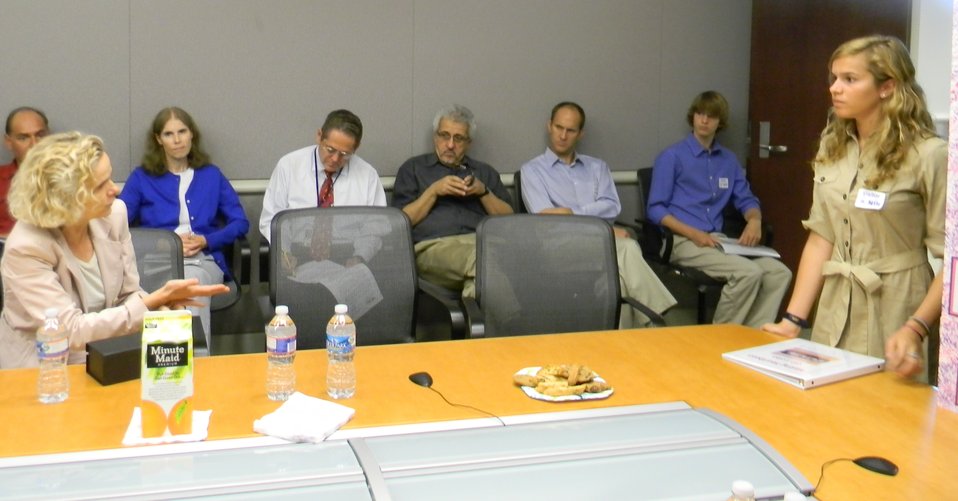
Volkow and Schumacher5

Dr. Nora Volkow (NIDA Director) and Darby Kathryn Schumacher (2nd place winner) discuss Schumacher's project